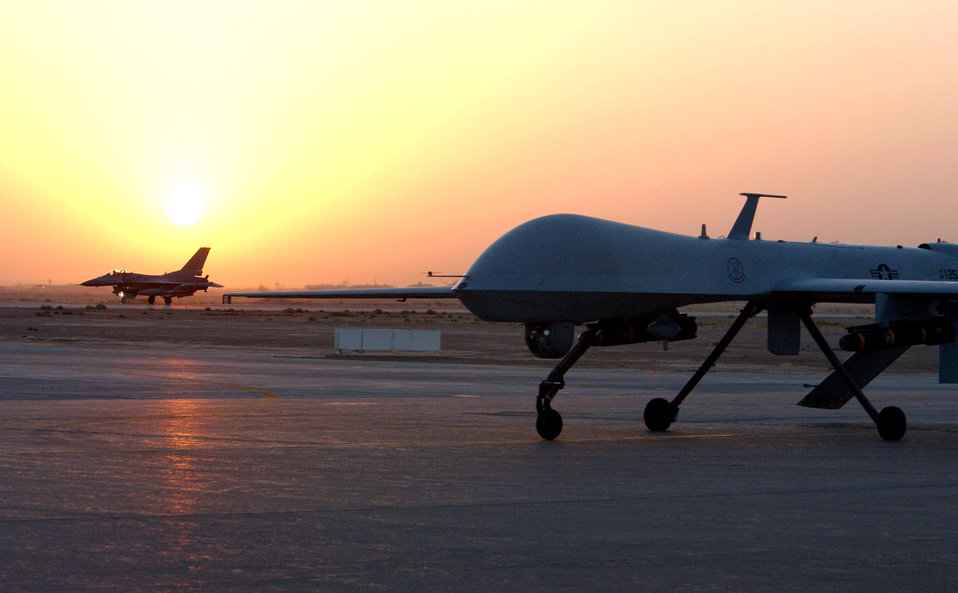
At day's end

An MQ-1 Predator unmanned aerial vehicle and F-16 Fighting Falcon return from an Operation Iraqi Freedom combat mission. Both aircraft provide intelligence, search and reconnaissance gathering features, as well as munitions capability to support ground troops and base defense.